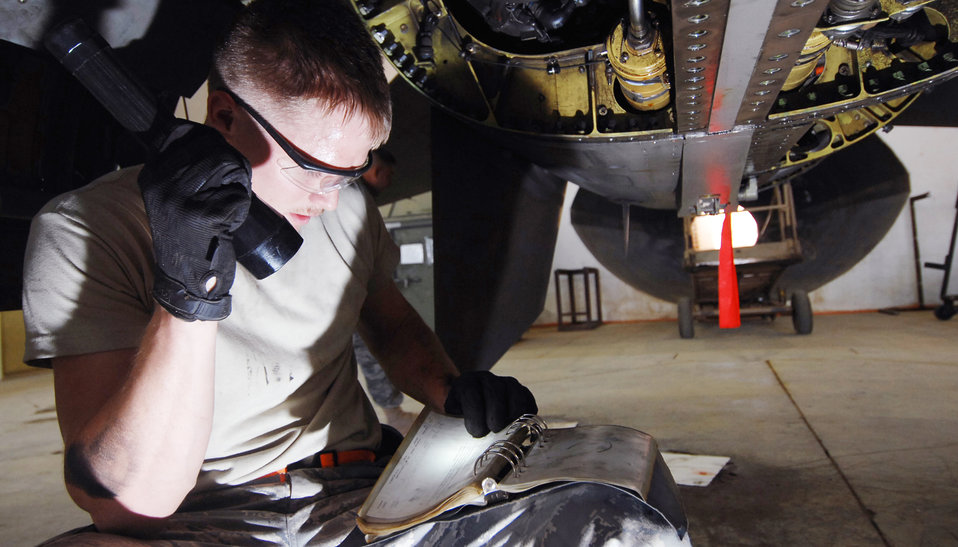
Balad maintainers keep F-16s flying

Airman Travis Sharp, 332nd Expeditionary Maintenance Squadron crew chief, reviews his checklist while inspecting the lower fuselage of an F-16 Fighting Falcon Oct. 20, 2009, at Joint Base Balad, Iraq. Airman Sharp is deployed from Spangdahlem Air Base, Germany.